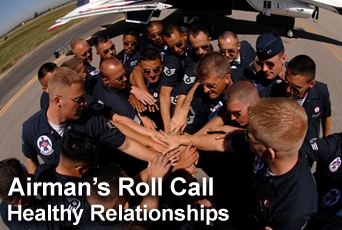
Airman's Roll Call

The newest Airman's Roll Call focuses on building healthy relationships to manage stress.